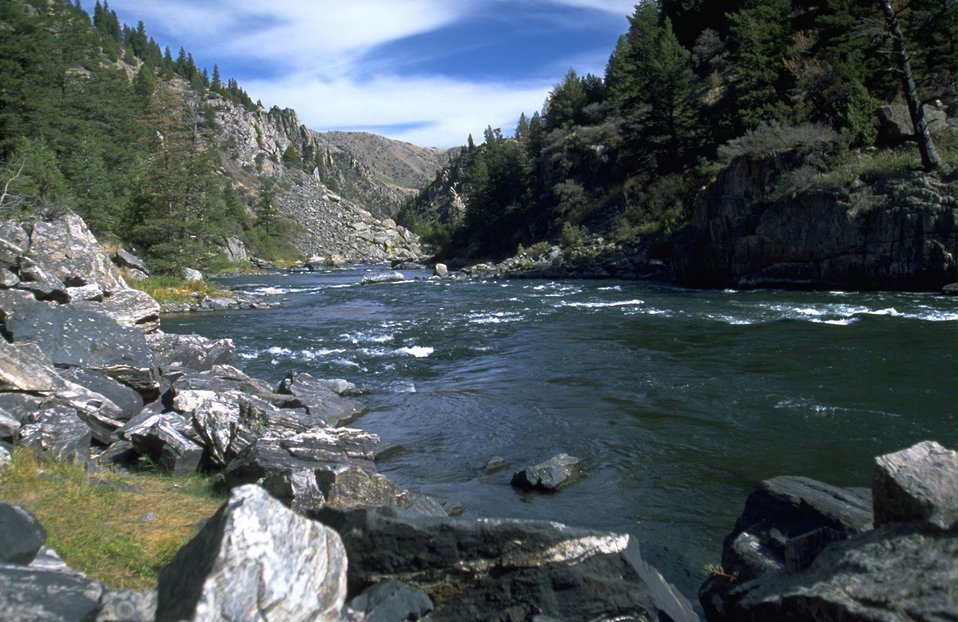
Looking downstrean of the Madison River